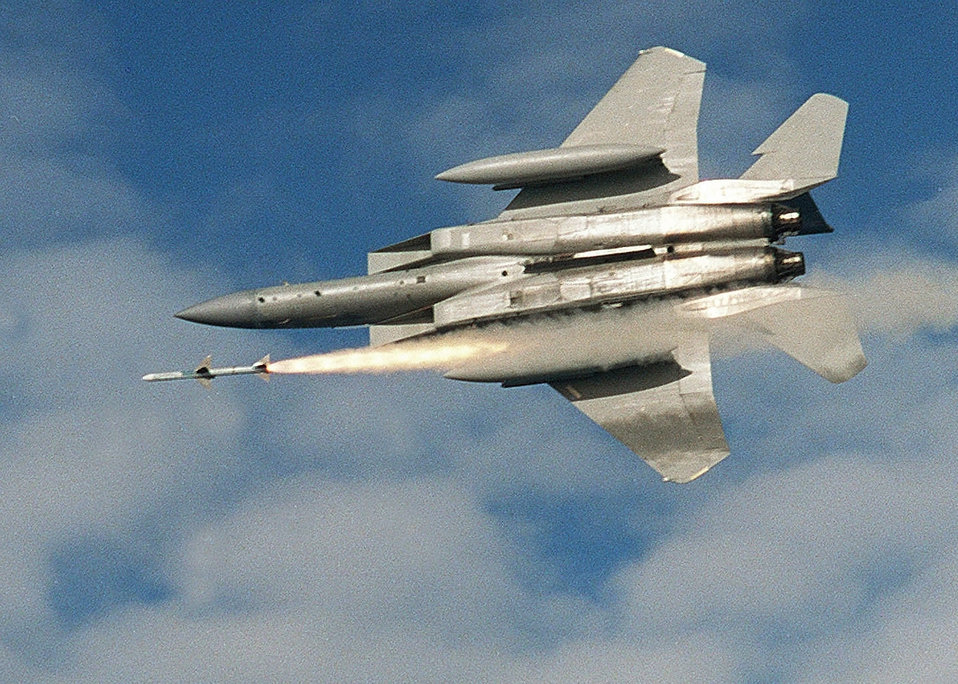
Sparrow launch

FILE PHOTO -- F-15A Eagle launches an AIM-7 Sparrow missile during a Weapons System Evaluation Program. The F-15 is from of the 110th Fighter Squadron, 131st Fighter Wing, Air National Guard, Lambert-St. Louis International Airport, Mo.